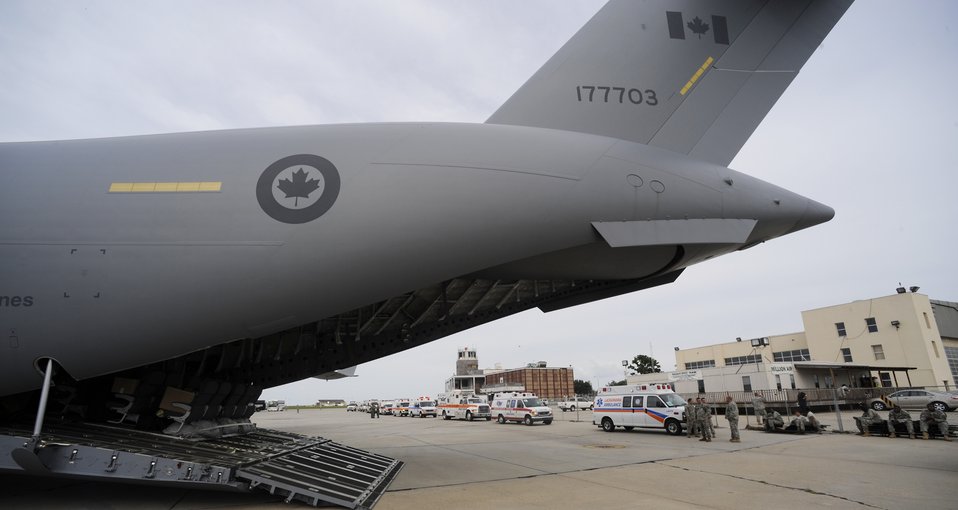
Canadian forces assist in hurricane evacuation

Emergency vehicles carrying evacuees of Hurricane Gustav stage near a Canadian air force CC-177 Aug. 31 at Lake Front Airport in New Orleans. The Federal Emergency Management Agency and the Department of Defense provided flights to transport citizens to destinations safely outside the hurricane's path.